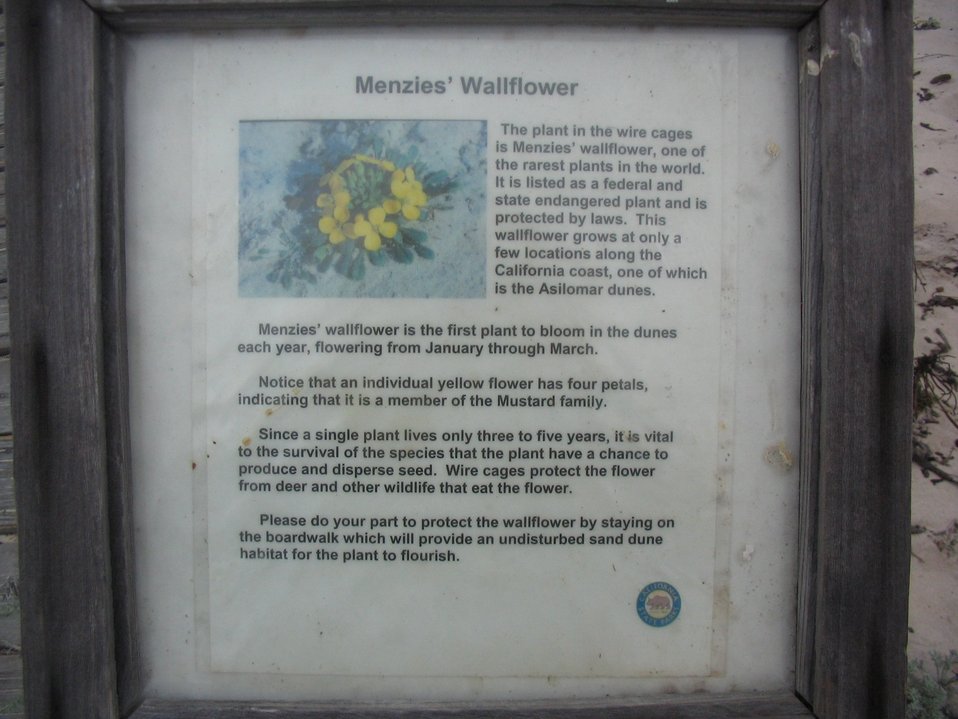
Menzies wallflower. This is an endangered species.